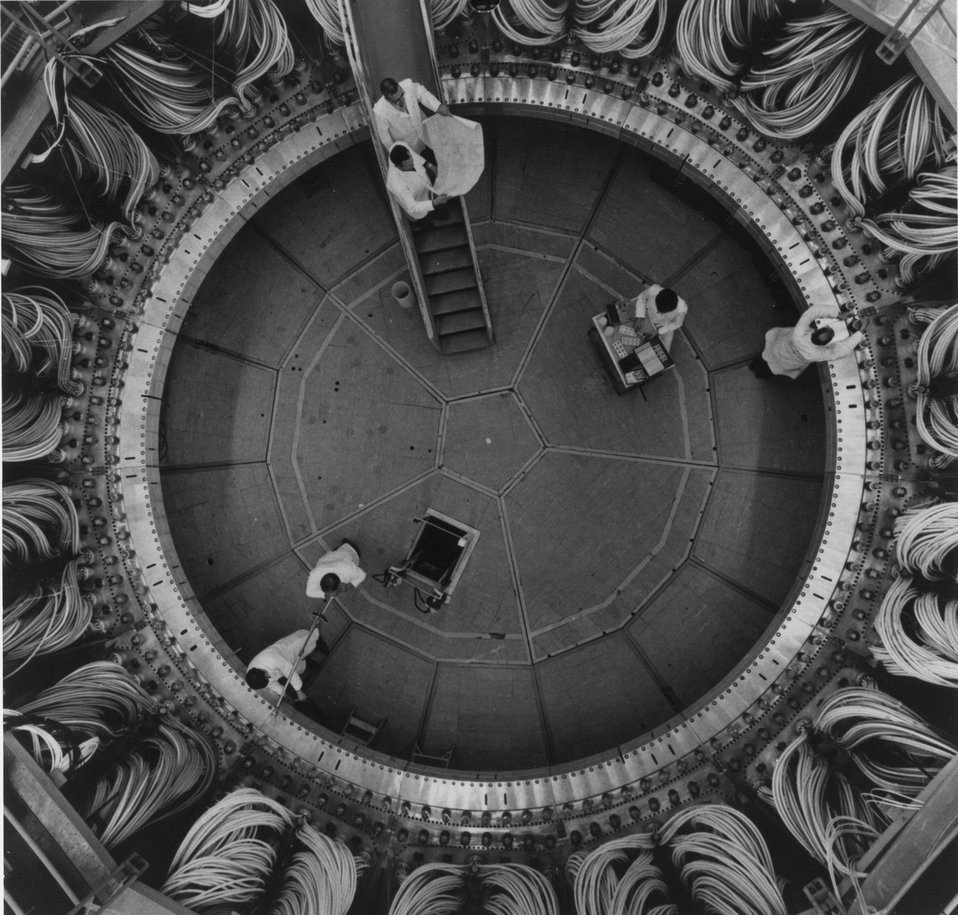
Scyllac is an experiment in the Controlled Thermonuclear Research (CTR) Program at the Energy Research and Development Administration's Los Alamos (N.M.) Scientific Laboratory. The goal of ERDA's CTR program is to develop the fusion process as a major source of abundant, economical and environmentally attractive energy. c. 1974